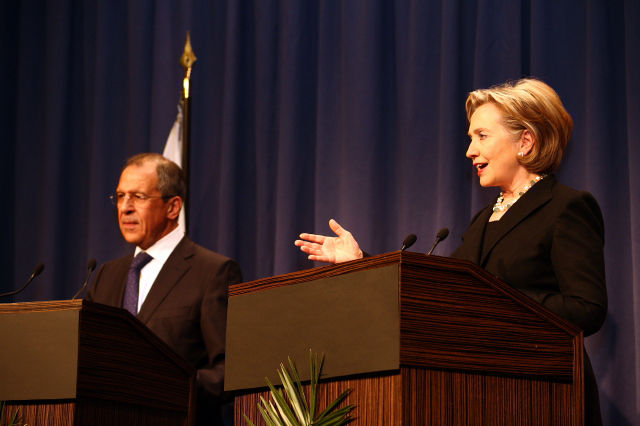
Press Conference With Russian Foreign Minister

Press conference after dinner meeting between U.S. Secretary of State Hillary Rodham Clinton and Russian Foreign Minister Sergey Lavrov in Geneva, Switzerland March 6, 2009.